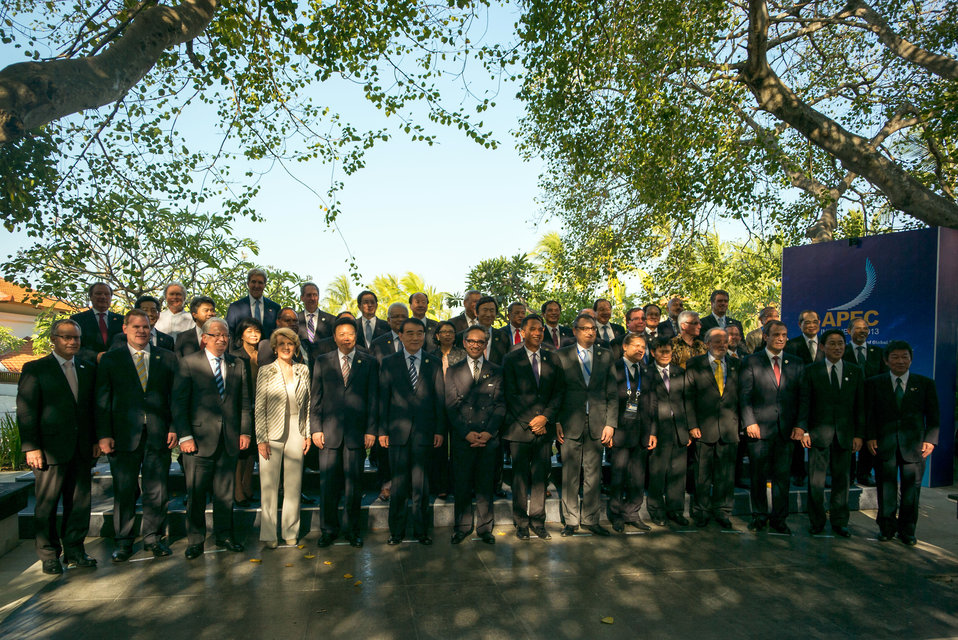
Secretary Kerry Poses for APEC Ministerial Meeting Family Photo

U.S. Secretary of State John Kerry poses with foreign ministers and trade ministers of the Asia Pacific Economic Cooperation (APEC) member countries during a group photo session at the APEC Ministerial Meeting in Bali, Indonesia, on October 4, 2013.